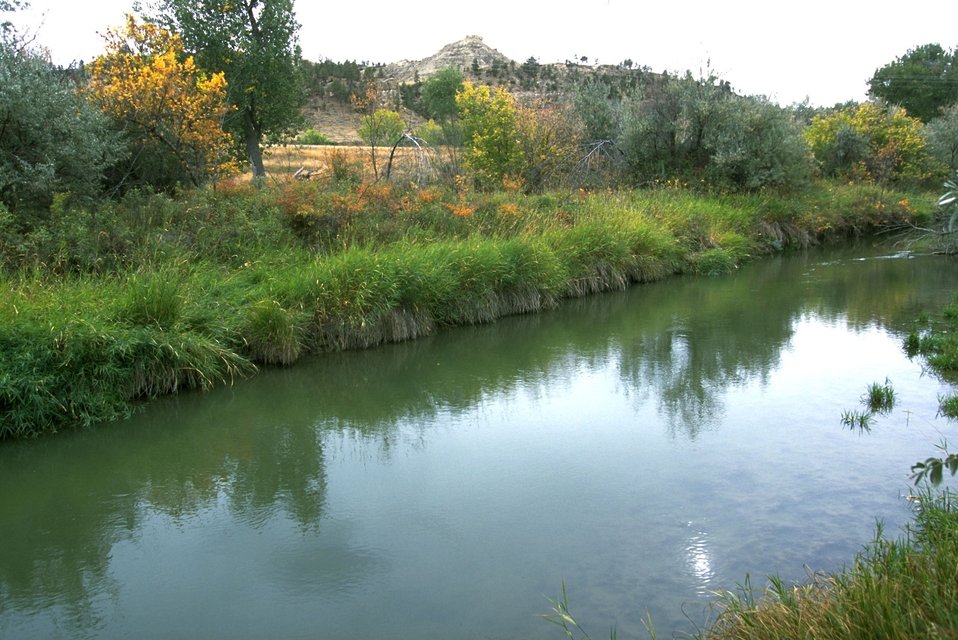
Grass reflecting in the Yellowstone River channel at the Howrey Island Nature Trail